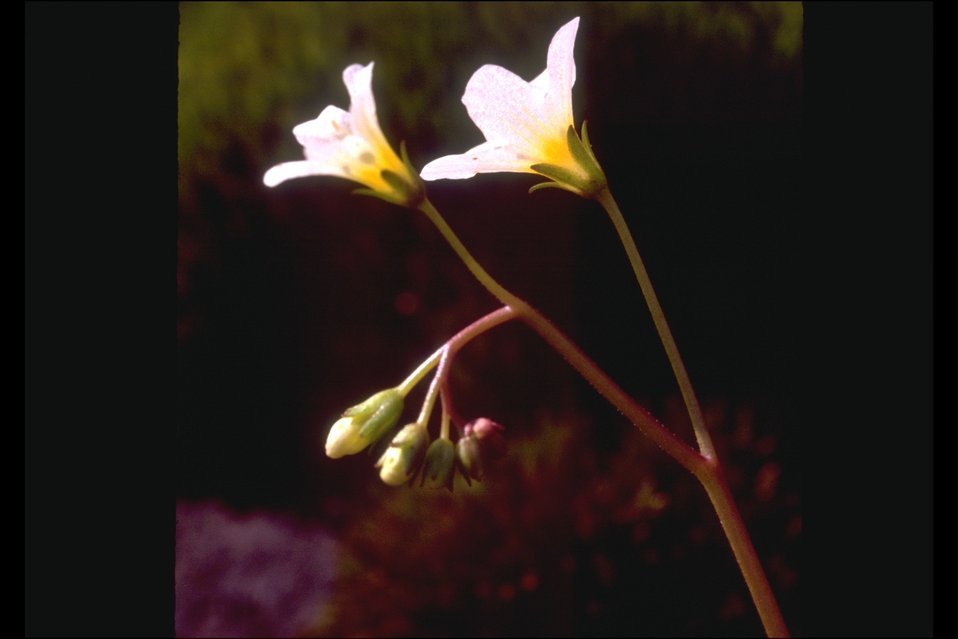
Close up of the Mistmaids (Romanzoffia californica) at Shady Cove near the Rogue River.